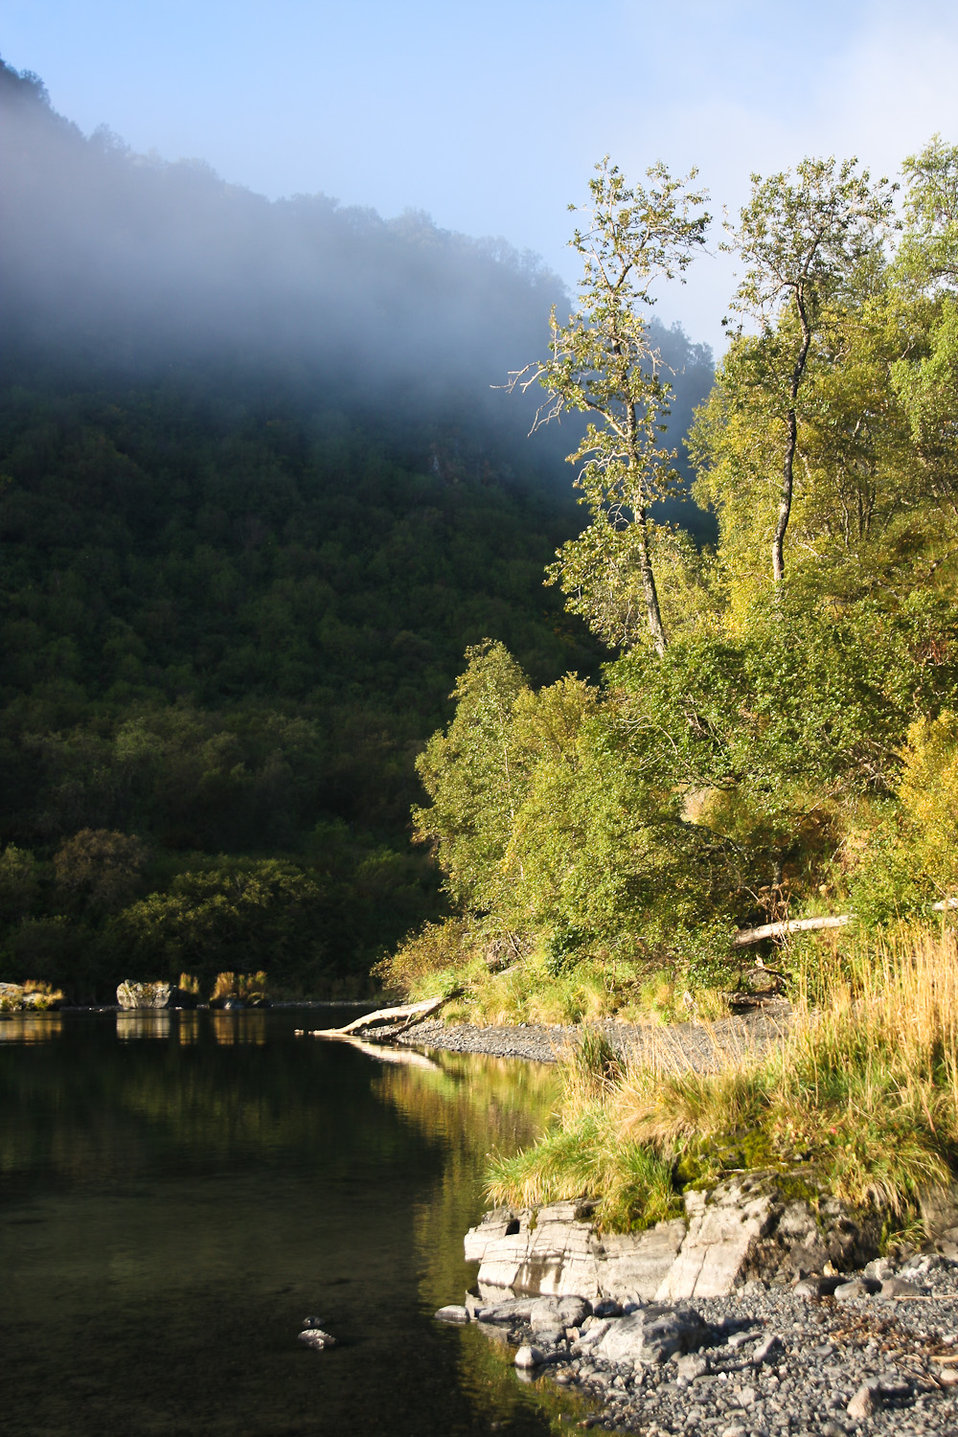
Uganik Lake Shoreline

Lisa Hupp/USFWS